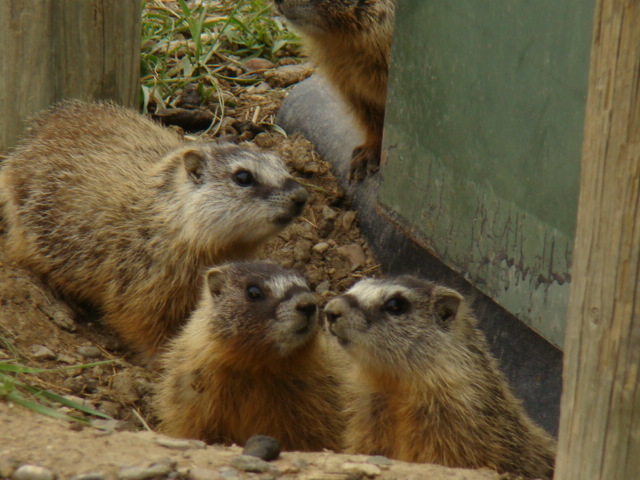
Yellow-bellied Marmots

The lands of the refuge were established to protect and provide habitat for migratory birds that cross State lines and international borders and are by law a Federal trust responsibility.

The refuge is of great value to waterfowl and shorebirds, as well as other migrating water-dependent bird species, because of the diversity of wetland and upland habitats that provide for the diverse life cycle needs of these species.